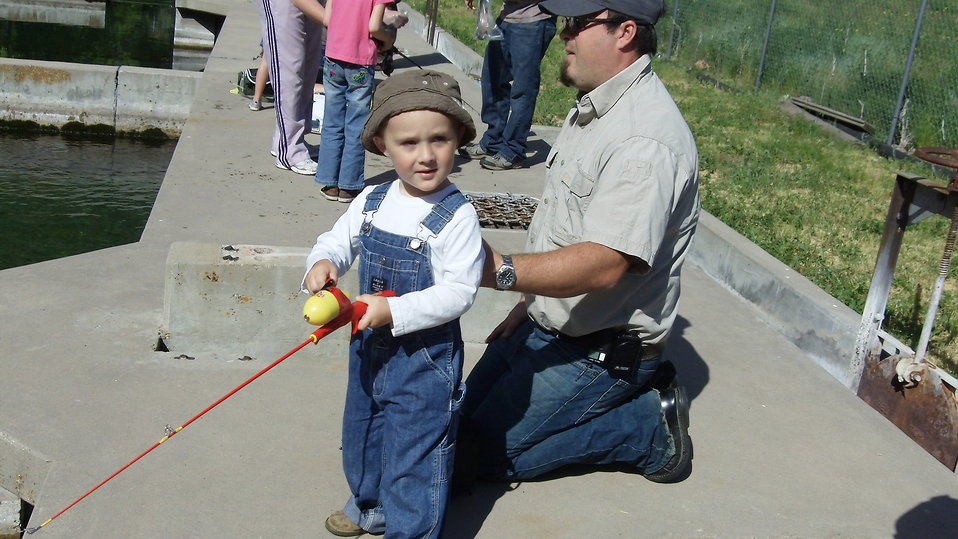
Young Boy in Fishing Gear

On June 11, 2011, Jones Holes National Fish Hatchery held its annual KIDS FREE FISHING DAY. Families came out to enjoy the great outdoors. Everyone had a chance to tour the hatchery, feed fish and hook the 'big' one. Girls and boys learned it is not bad to touch a worm or hold a fish. Project Leader 'Kip Bottomley' was a leader that day in showing children how to catch and release fish. Staff, Travis Anderson and Michelle Pagliasotti also assisted in making the day a fun experience for who attended. UT Division of Wildlife Resources also help in the event.